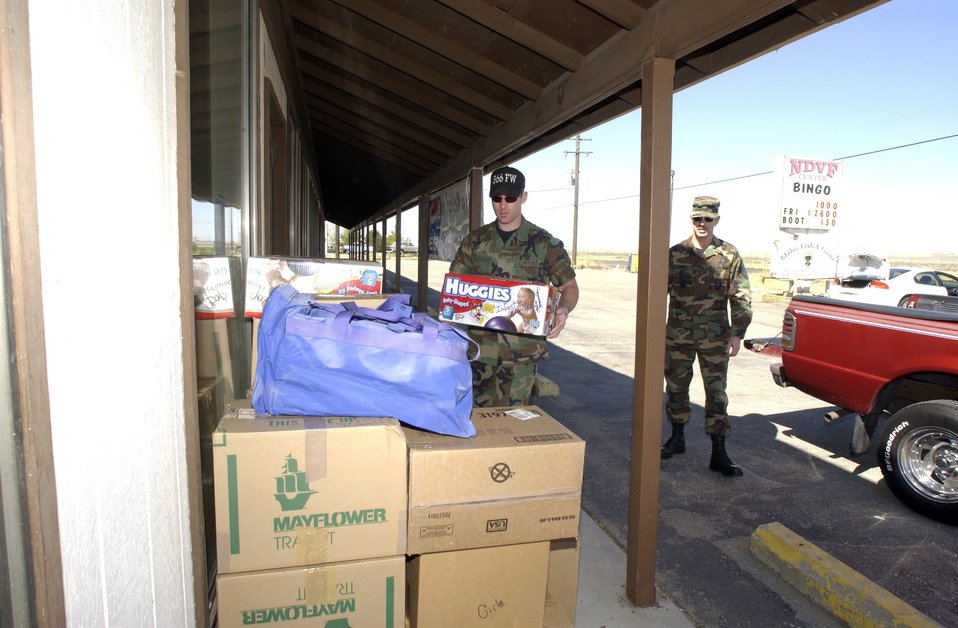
Airmen, families provide relief to hurricane victims

MOUNTAIN HOME, Idaho -- Staff Sgt. Jason Buckner (left) and Master Sgt. William Smith deliver donated supplies to Operation Idaho Angels, an organization designed to give help to Hurricane Katrina victims. The Airmen are assigned to the 366th Comptroller Squadron at nearby Mountain Home Air Force Base.